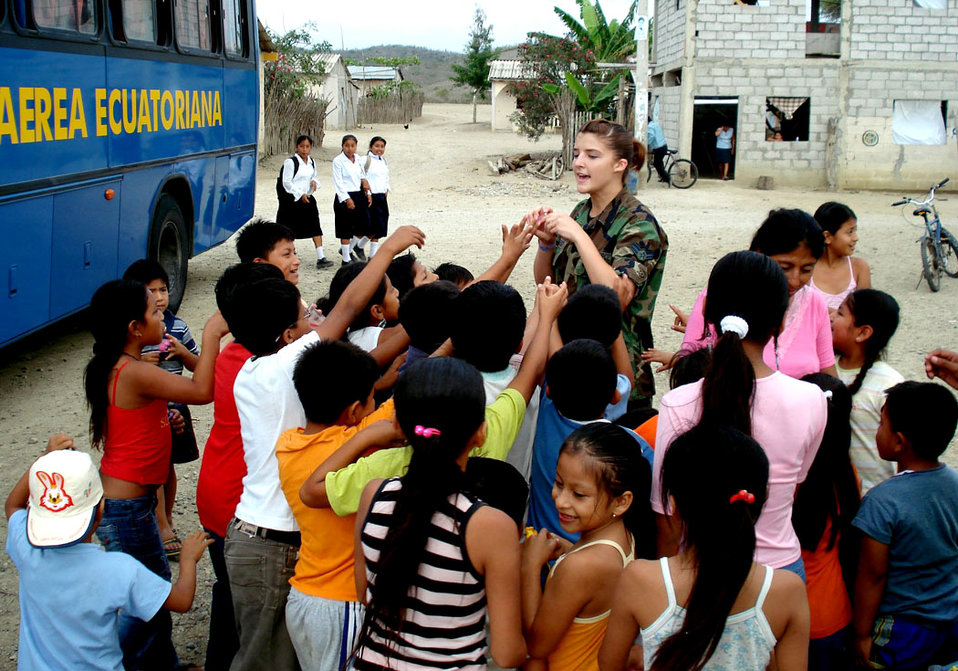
Holloman Airmen return from Ecuador medical visit

Airman 1st Class Ashley Couturier hands candy out to local children while deployed to Ecuador. Fourteen Airmen traveled there from Holloman Air Force Base, N.M., for two weeks on a humanitarian assistance deployment and treated more than 6,800 patients and filled more than 17,500 prescriptions. Airman Couturier is assigned to the 49th Aeromedical Dental Squadron.